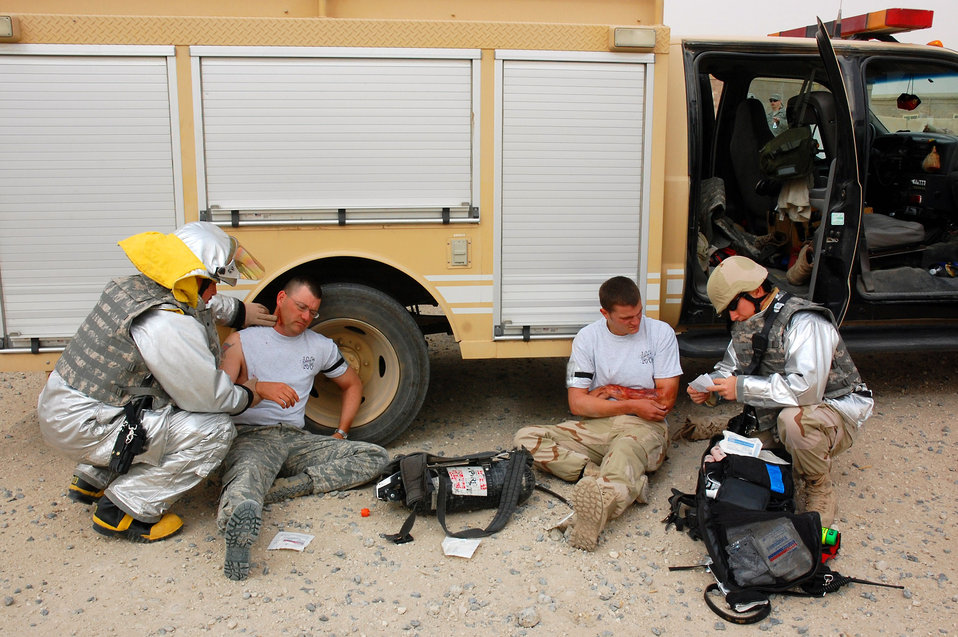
Responders ready for real deal

Staff Sgt. Michael Crispin (left) and Senior Airman Jeremy Brush (far right) administer first aid to Airmen with simulated wounds during a battle drill April 9 at a Southwest Asian air base. Base members continually test the combat readiness and response capabilities of the Airmen in the wing. Sergeant Crispin and Airman Brush are 386th Expeditionary Civil Engineer Squadron firefighters.